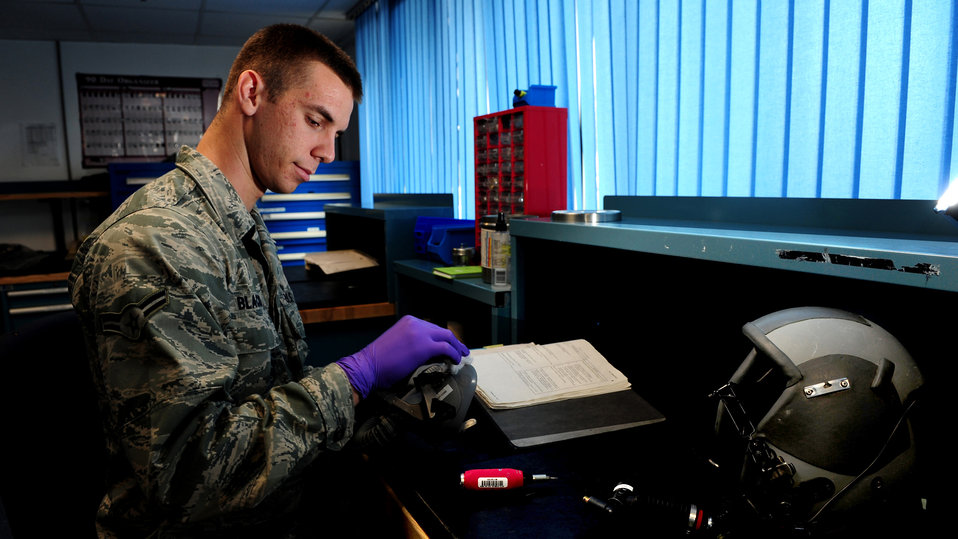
Breathing freely

Airman 1st Class Clinton Blackwood inspects an MBU-12/P oxygen mask at Ramstein Air Base, Germany, Aug. 16, 2011. All oxygen equipment must be examined every 30 days to ensure its efficiency.